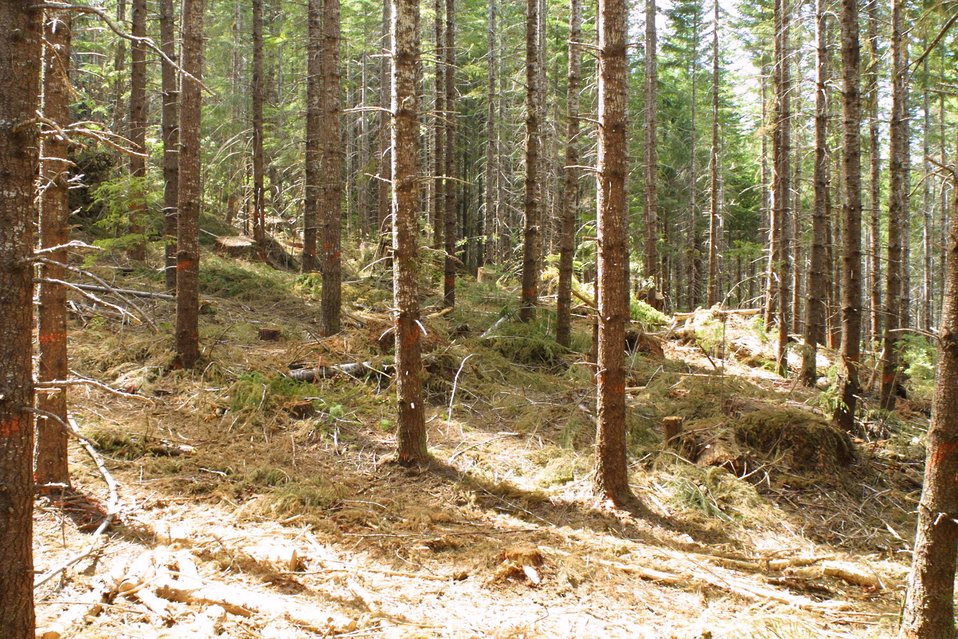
Camas East Timber Sale in Late Successional Reserve.